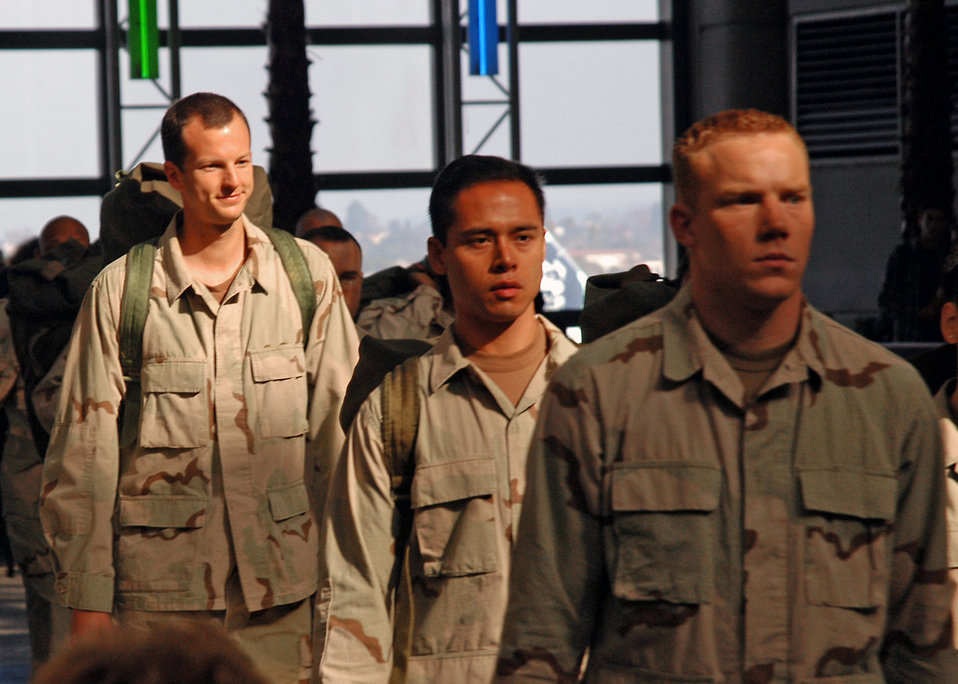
Super Bowl commercial spotlights Airmen

LOS ANGELES -- First Lt. Jeff McGowan, left, and several other servicemembers walk along a concourse in the international terminal at Los Angeles International Airport during the filming of a commercial scheduled to air during the Super Bowl. Lieutenant McGowan is an engineer at the Space and Missile Systems Center at nearby Los Angeles Air Force Base.